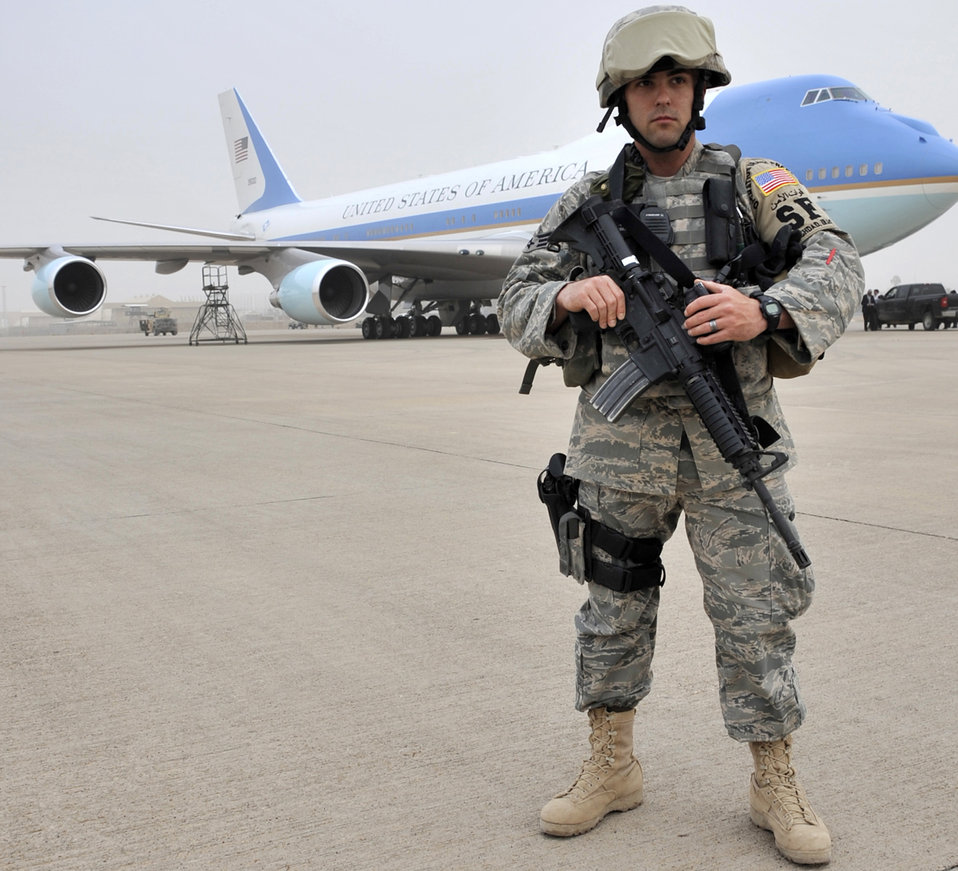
Don't come any closer

Staff Sgt. Matthew Smith guards Air Force One April 7 on the flightline at Sather Air Base, Iraq. President Barack Obama spoke to an American crowd at Camp Victory, Iraq, during an unannounced visit. Members of the 447th Expeditionary Security Forces Squadron protected the aircraft.